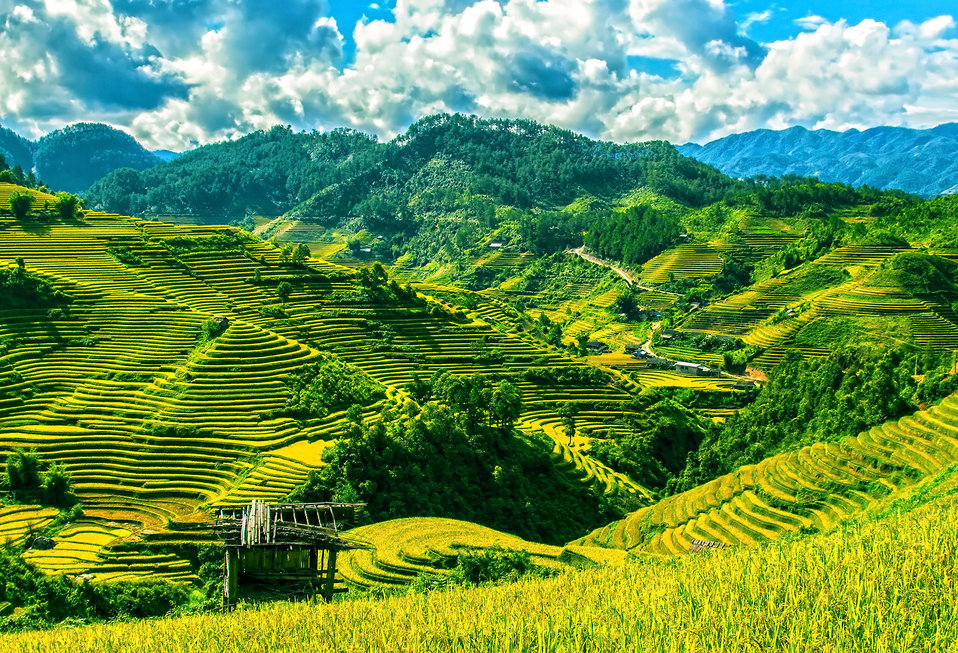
The season #2

Terraced fields in mu cang chai district, yen bai, vietnam's northwest.